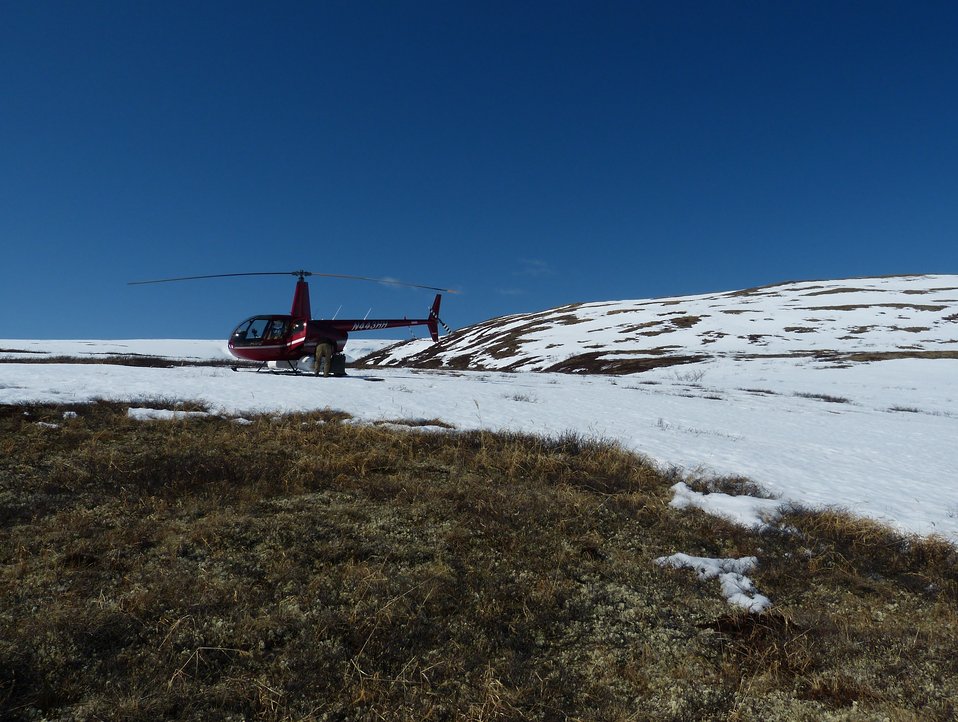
Kilbuck survey 5-14-2013 KSowl

Cliff-nesting raptor survey, Kilbuck Mountains, Yukon Delta National Wildlife Refuge

Photo credit: Kristine Sowl,
USFWS, YDNWR